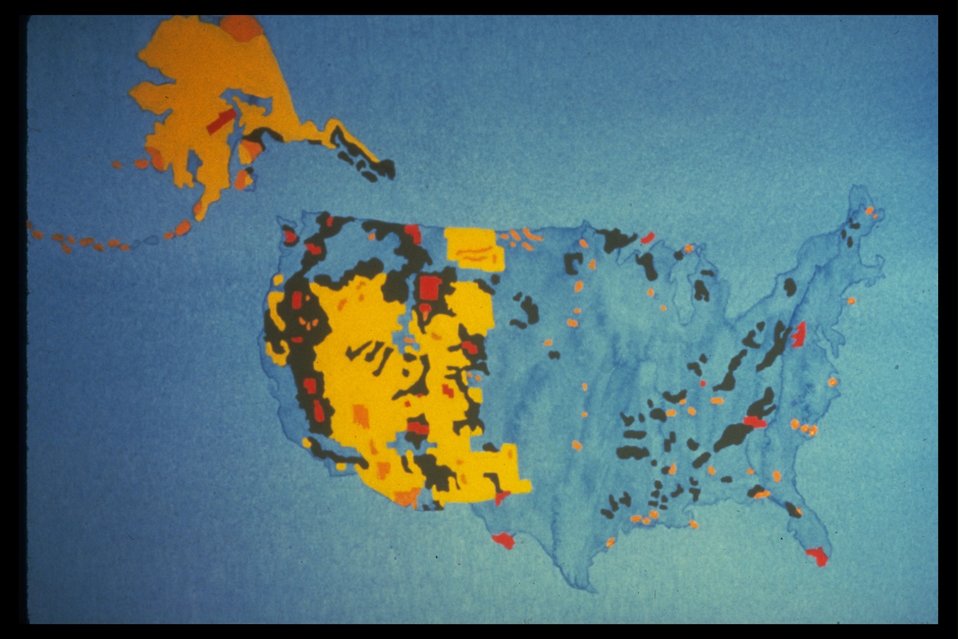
Map of U.S. public lands: BLM, FS, BIA, NPS.